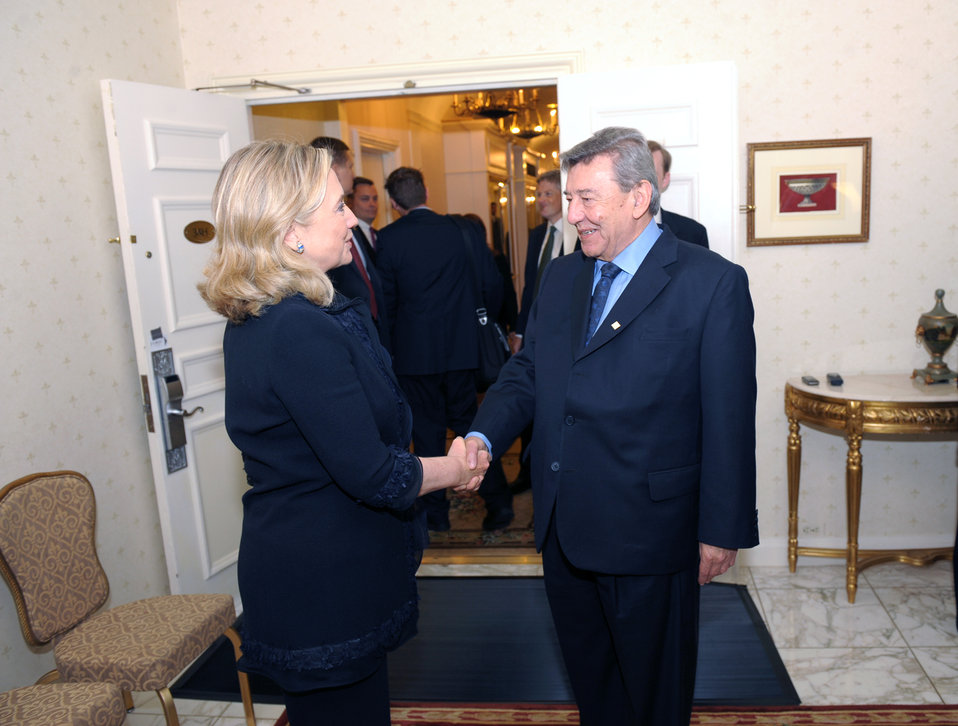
Secretary Clinton Meets With Peruvian Foreign Minister Roncagliolo

U.S. Secretary of State Hillary Rodham Clinton holds a bilateral meeting with Peruvian Foreign Minister Roncagliolo, at the Waldorf-Astoria Hotel in New York, New York, on September 22, 2011.